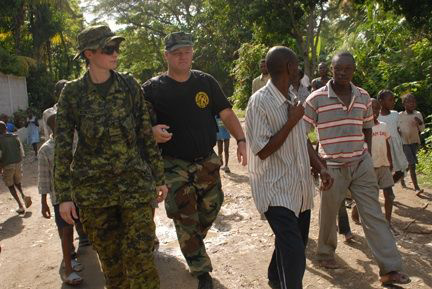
This image captured in the municipality of Ennery, Haiti, September 22, 2008, depicts U.S. Public Service (USPHS) Lt. Cmdr. Gary Brunette, and Canadian Army Capt. Gillian Batt, as they were walking with the locals towards their area medical clinic. Lt. Cmdr. Brunette and Capt. Batt had both embarked on this humanitarian effort aboard the USS Kearsarge (LHD 3).